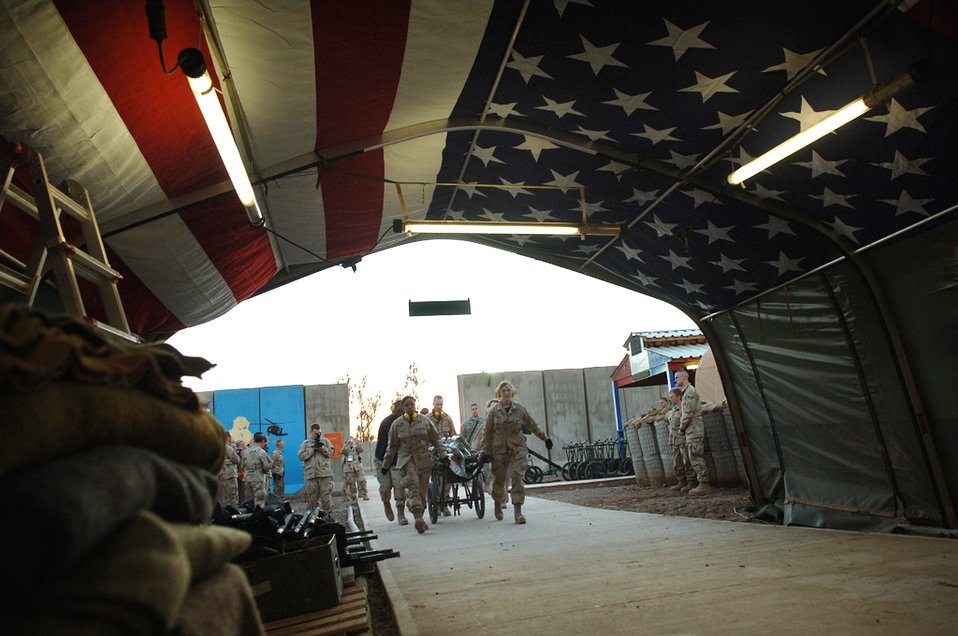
Hero's Highway begins in Iraq

Airmen deployed to the 332nd Expeditionary Medical Group rush the first litter patient seeking medical treatment down Hero's Highway after posting the American flag Jan. 22 at Balad Air Base, Iraq. The flag is posted on the inner roof a tent so injured troops can look up and know they are in an American area when brought in on litters seeking medical treatment. The medical group raised injured troops' survival rate to 98 percent.